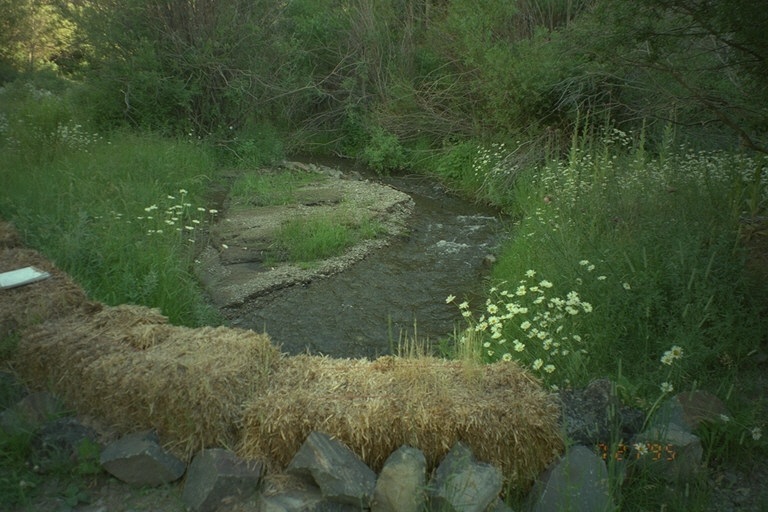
Riparian area Public Lands Salmon Field Office UCSC Upper Columbia Salmon Clearwater District